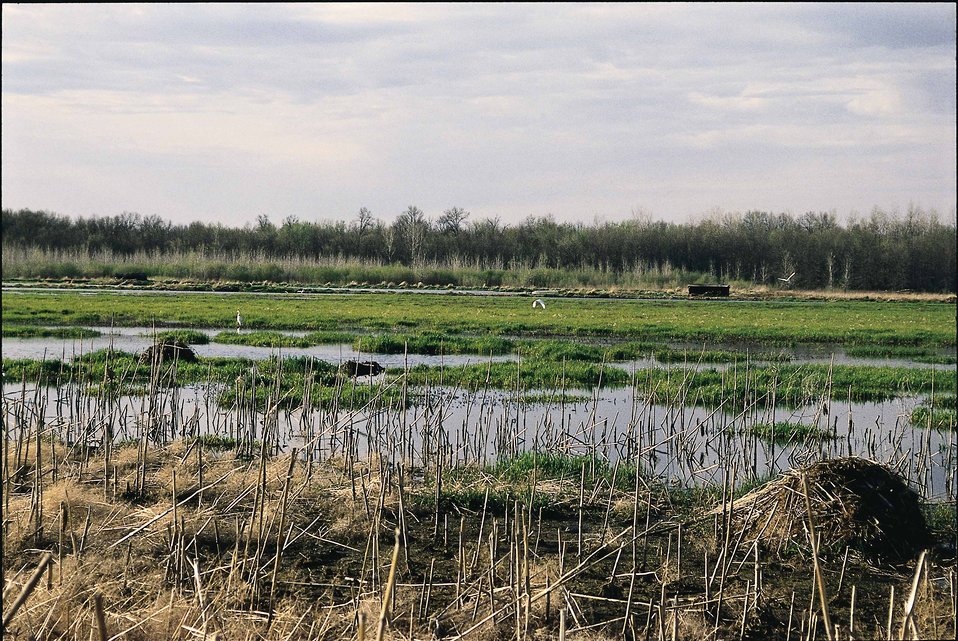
Restored wetland on a farm in Van Buren County offers wildlife habitat and filtered water.